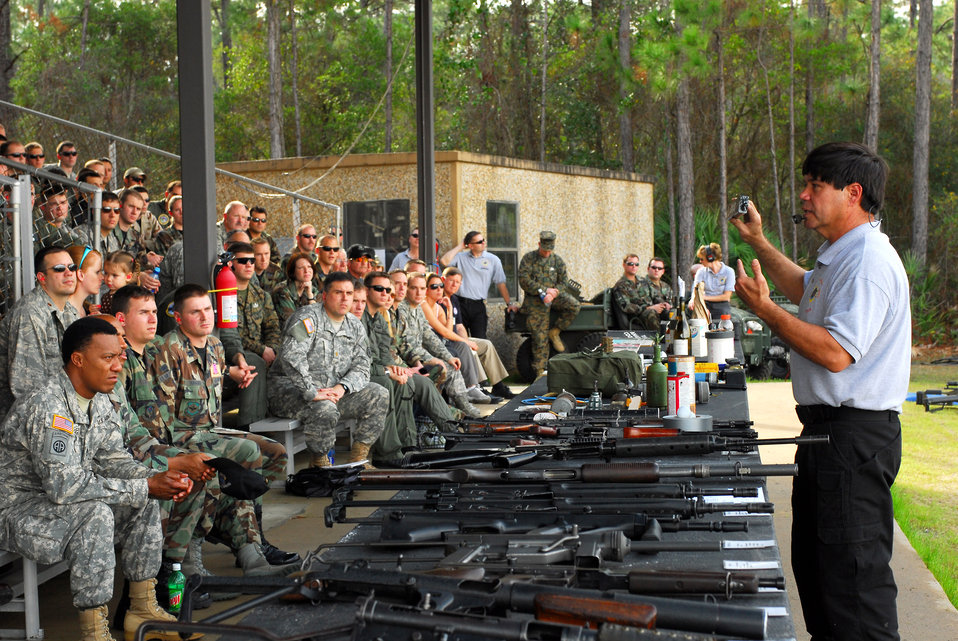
Having a dynamic time

James Wilson explains explosives and improvised explosive devices used by terrorists in a demonstration Jan. 9 on the Dynamics of International Terrorism range at Hurlburt Field, Fla. The demonstration showed students the capabilities of weapons primarily used by terrorist groups. Students from all branches of the U.S. military participated in the course. Mr. Wilson is assigned to the Air Force Special Operations School.